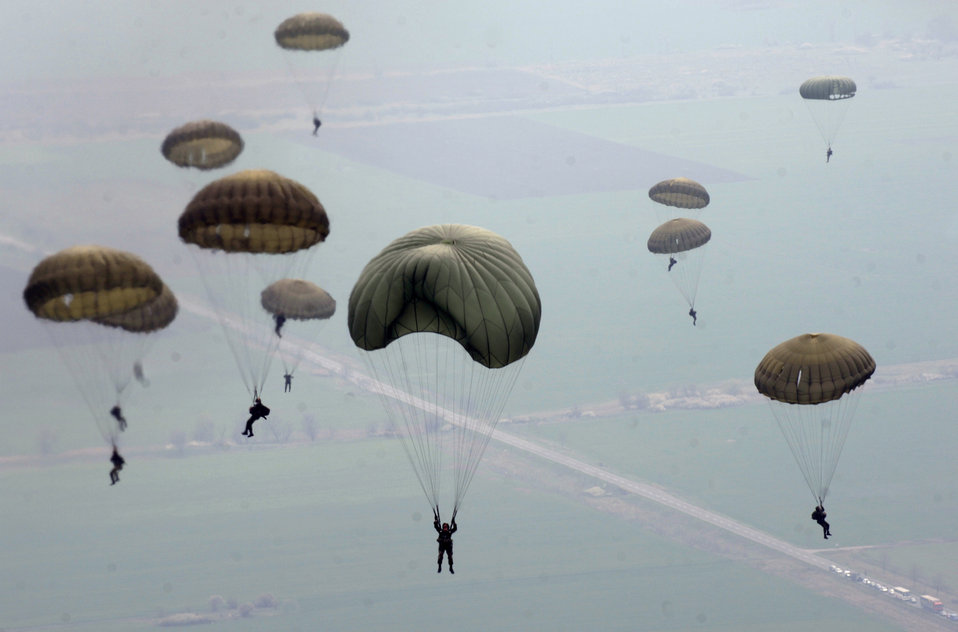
Just hanging around

A C-130 Hercules delivers U.S. Air Force, U.S. Army and Bulgarian special forces paratroopers to a drop zone near Bezmer Aviation Base, Bulgaria, during Exercise Thracian Spring 2008. The Airmen and Soldiers will conduct several day and night static line jumps in the bilateral exercise.